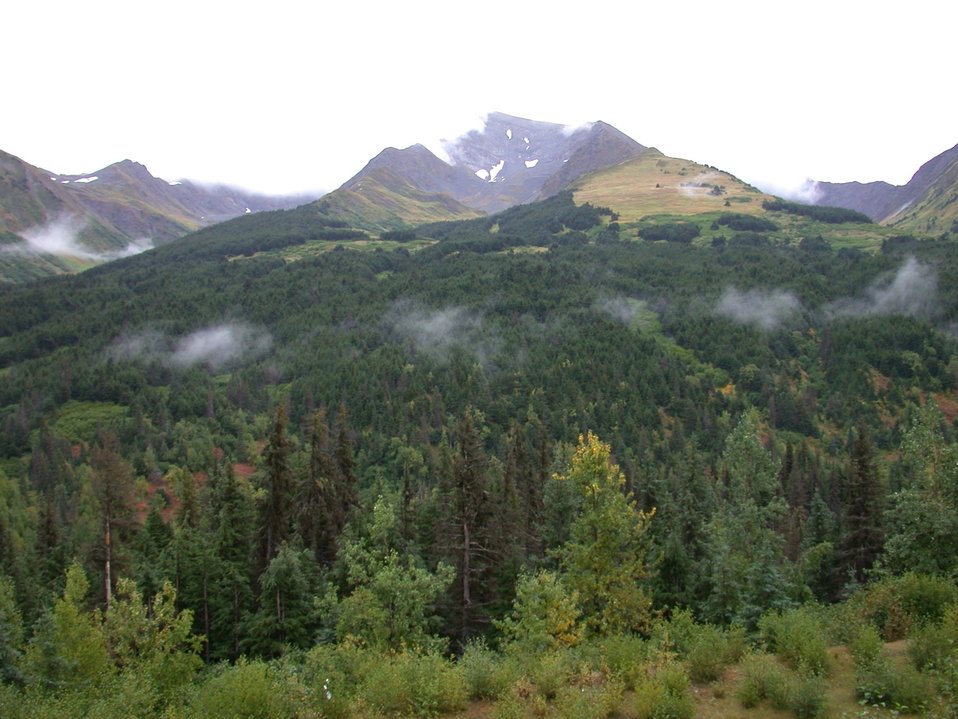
Inland from Anchorage.